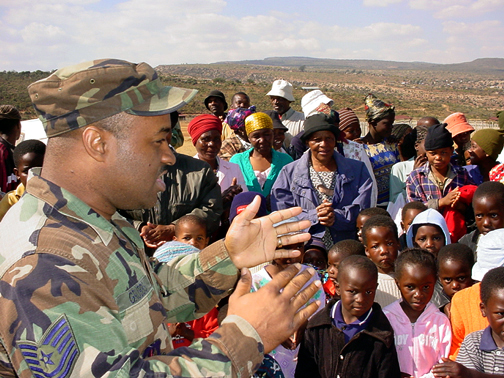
Airmen help South Africans by providing donations

KGAUTSWANE, South Africa -- Tech. Sgt. Victor D. Grubbs leads and teaches children of the community development center here a song July 10. Airmen, who deployed to South Africa for the MedFlag 2004, delivered donations to the children. Sergeant Grubbs is from 3rd Air Force at Royal Air Force Mildenhall, England.